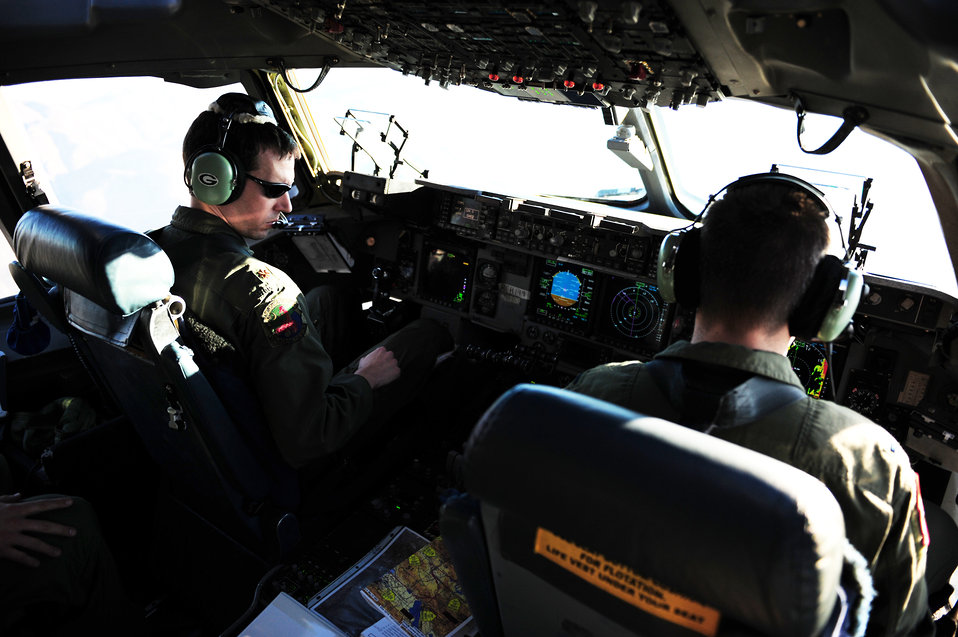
Meals, water delivered for Haiti relief

Maj. Jason Kirkland (left) and 1st Lt. David Redwine approach a drop zone over Haiti during an air delivery mission in support of Operation Unified Response Jan. 21, 2010. The mission was the second air delivery flown to Haiti since relief operations began. The C-17 Globemaster III pilots are assigned to the 15th Airlift Squadron at Charleston Air Force Base, S.C.